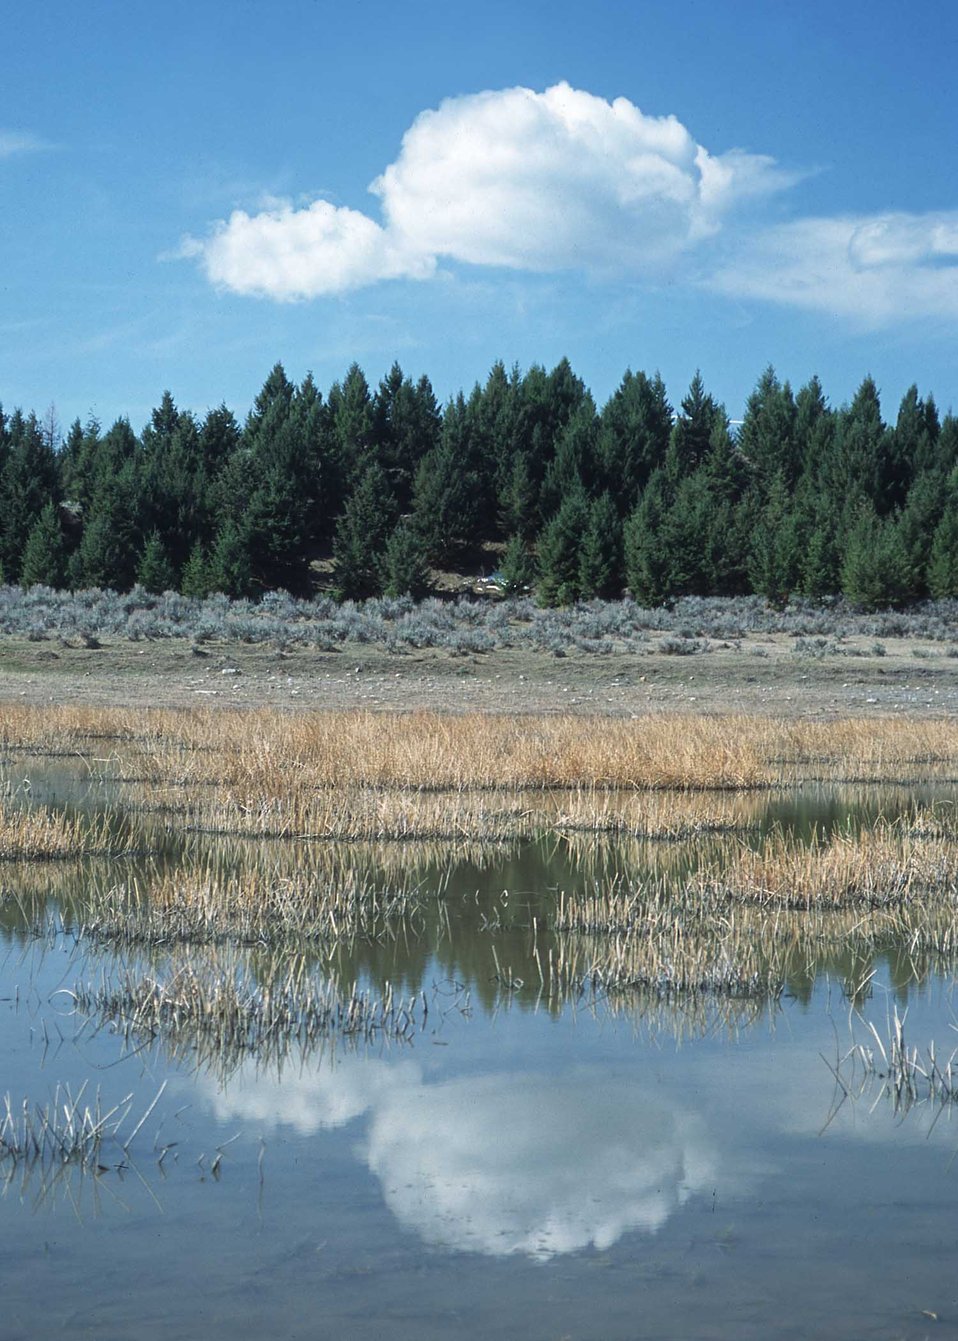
Scenic wetlands in northcentral Montana.